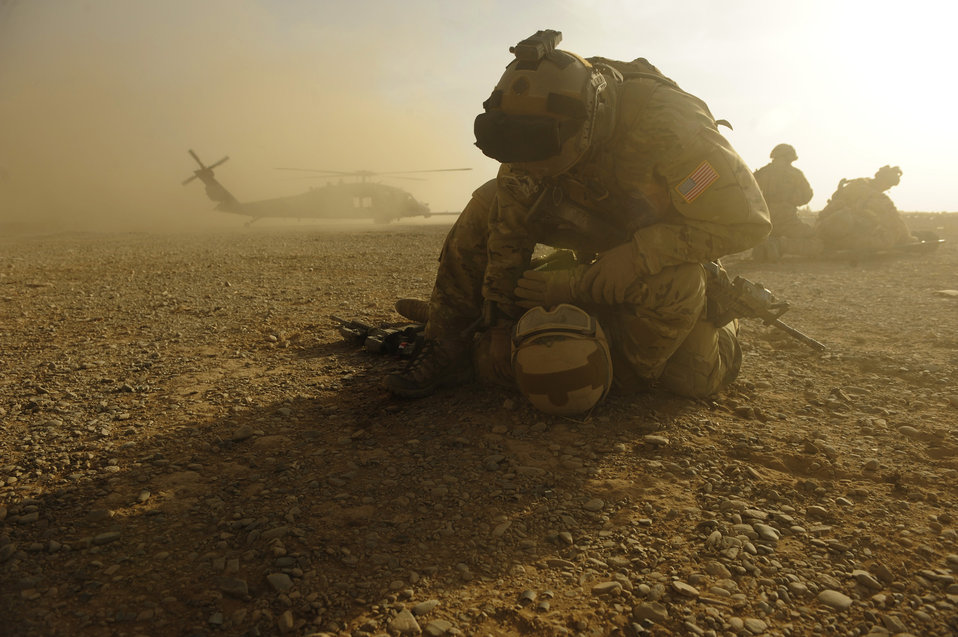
I've got you covered

Capt. Nick Morgans protects a 'casualty' from flying dirt as an HH-60 Pave Hawk lands during a mass casualty scenario Dec. 24, 2010, near Kandahar, Afghanistan. .